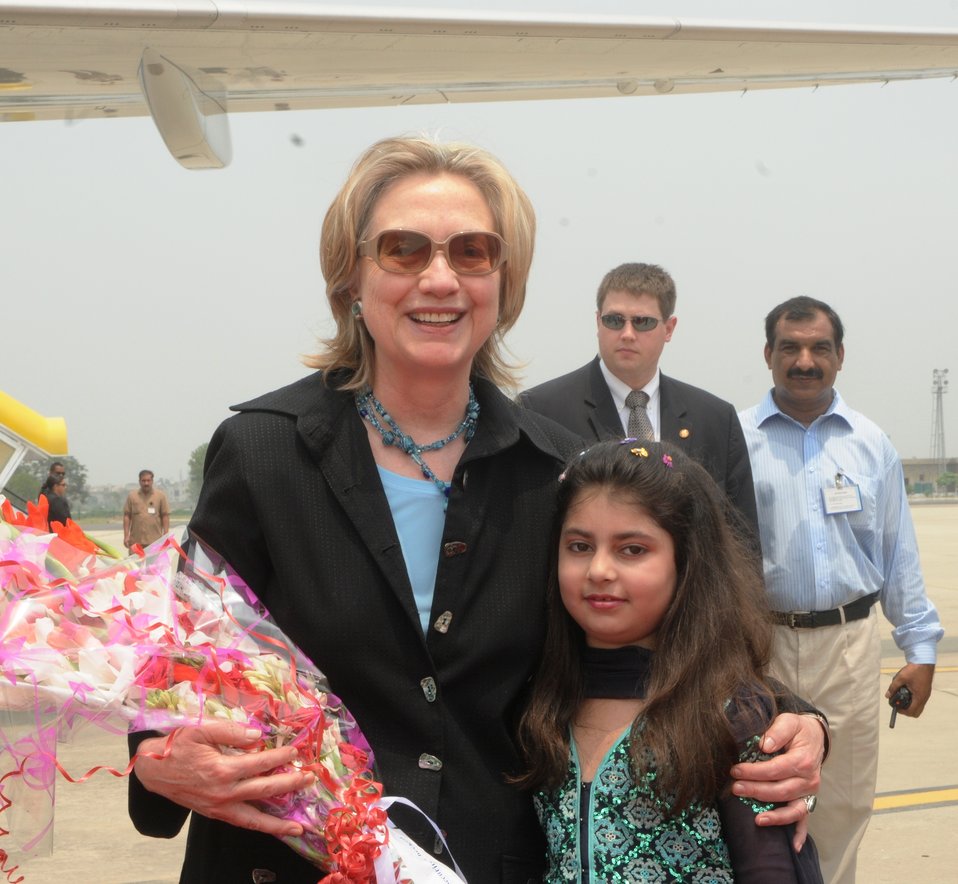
A Young Girl Attired in Pakistani National Dress Presents a Bouquet to Secretary Clinton

A young girl attired in Pakistani national dress presents a bouquet to the U.S. Secretary of State Hillary Rodham Clinton upon her arrival in Islamabad, Pakistan, on July 18, 2010.